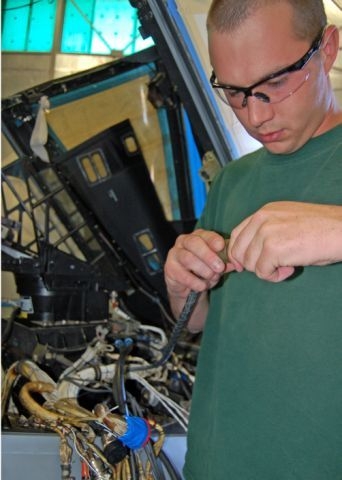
Modifications to extend service life of A-10s

John Shuma rewires the cockpit of an A-10 Thunderbolt II at Hill Air Force Base, Utah. The work is part of the precision engagement modification program managed by the 309th Aircraft Maintenance Group. Once completed, the aircraft will include 10 new components, while another 12 will be upgraded. Mr. Shuma is an aircraft electrician with L3 Communications.